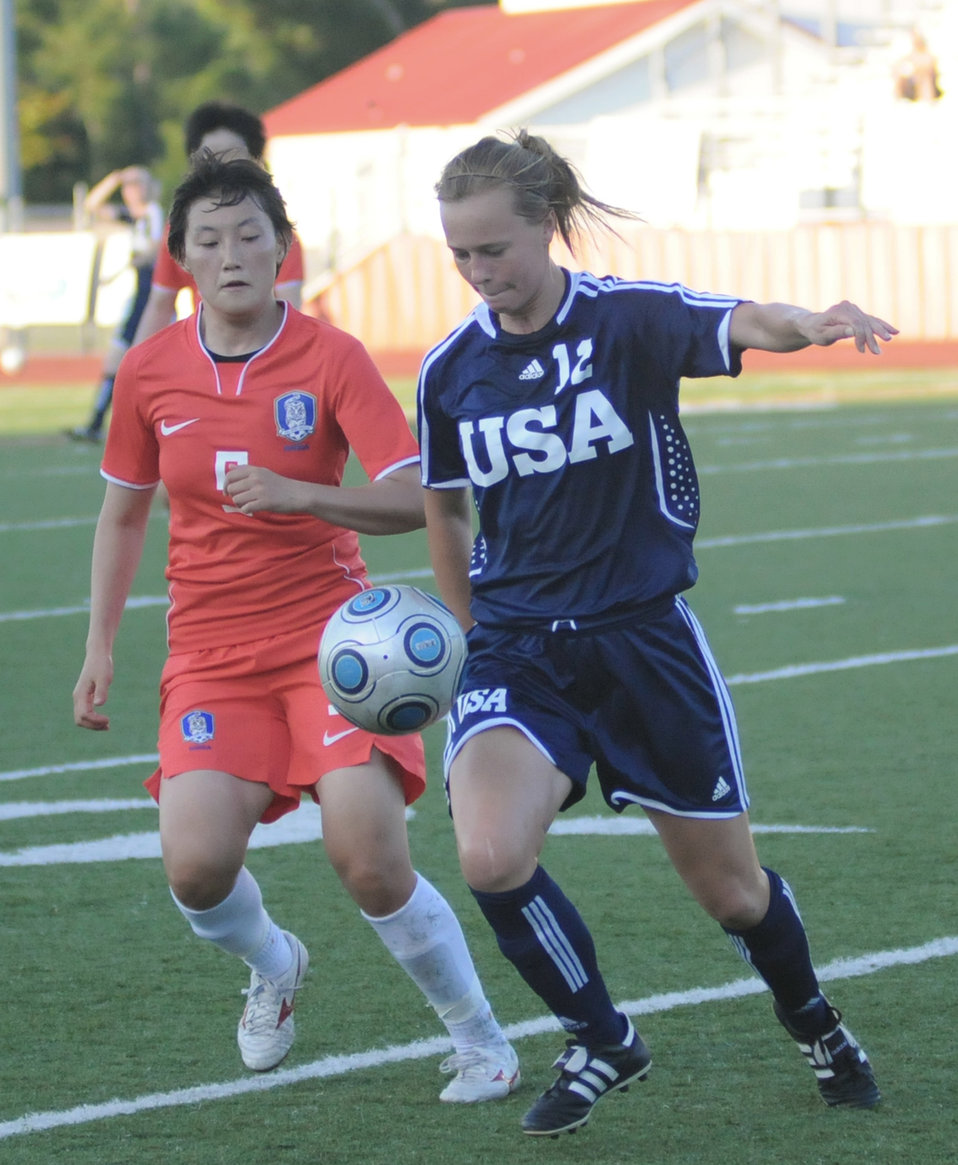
Keesler officials host Women's Soccer Championship

Soccer players from the United States and South Korea compete during the 5th Counseil Du International Sports Militaire Women's Soccer Championship at Biloxi High School Stadium June 7 in Mississippi. The CISM tournament, hosted by officials from Keesler Air Force Base, Miss., includes teams from Brazil, Canada, France, Germany, The Netherlands, South Korea and the United States. Matches are scheduled June 6 through 13, with the Gold Match June 13 at 2 p.m.